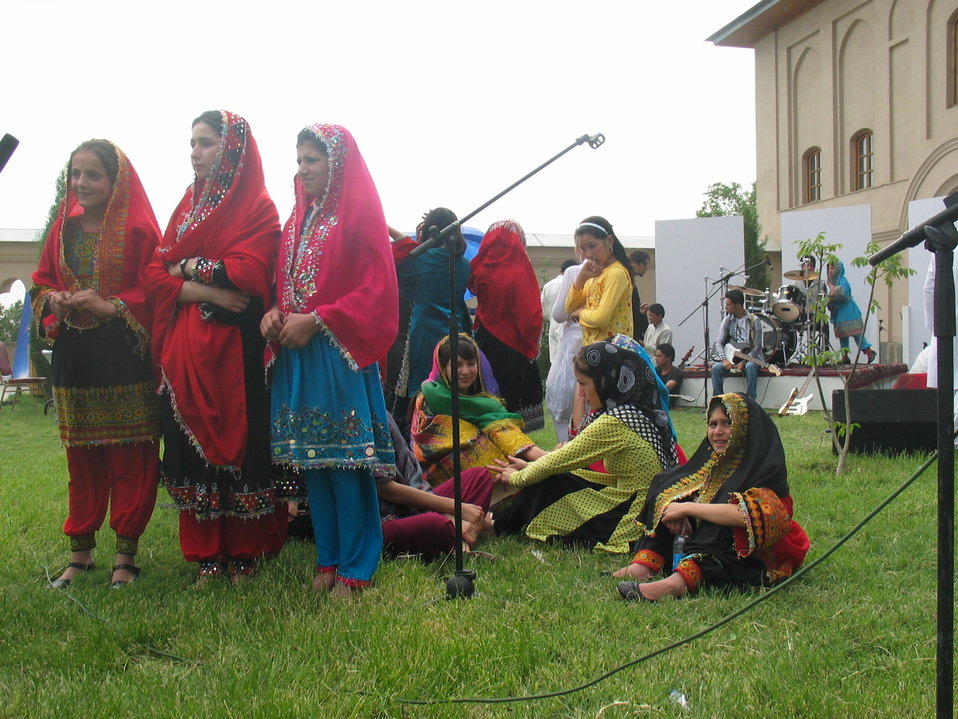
Afghan Youth Voices 003